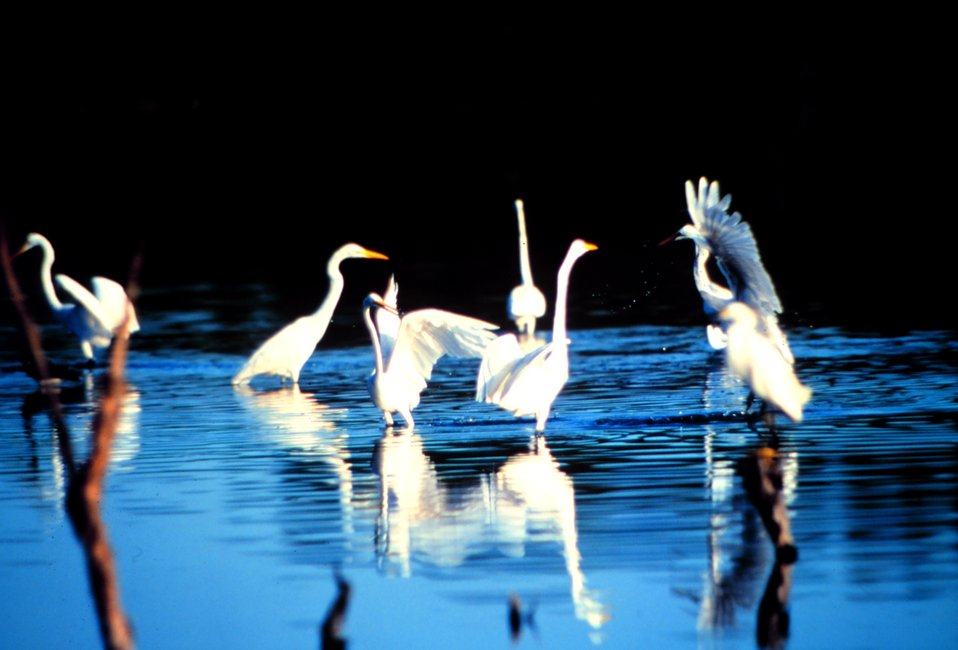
Jobos Bay National Estuarine Research Reserve. The Great Egret is a common species seen in the lagoons of Mar Negro. They feed on a variety of invertebrates that inhabit these areas.